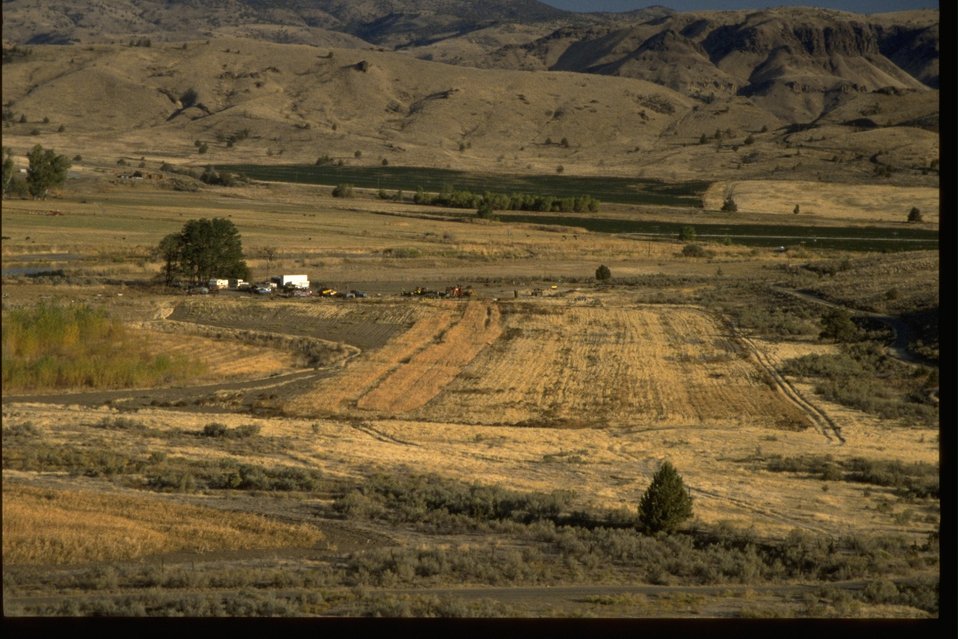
View from hill of BLM Clarno fields, cottonwood orchards, and wildlife (grain & sunflower) fields.